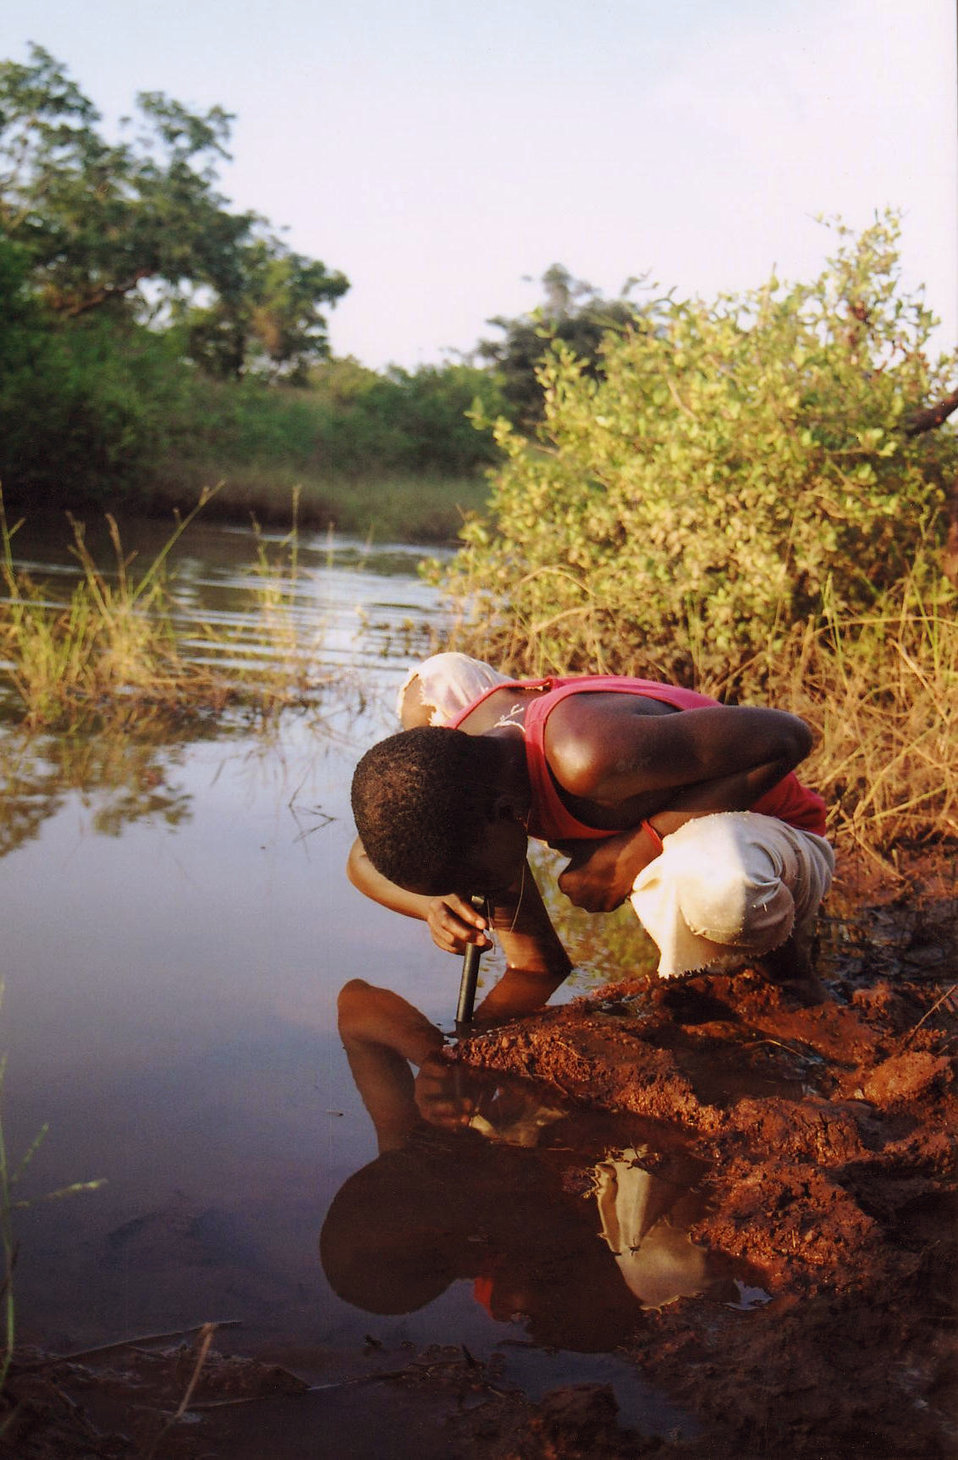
This 2003 image depicts a Ghanaian girl squatting at the edge of a dam, and drinking water directly from the local water source through a pipe filter. Similar to a straw, pipe filters are individual filtration devices, which allow people to filter their drinking water, in order to avoid contracting Guinea worm disease while traveling or working in the field. To prevent possible infection, all drinking water must be filtered in endemic areas to remove the microscopic copepods, or 'water fleas' that carry the infective Guinea worm larvae.